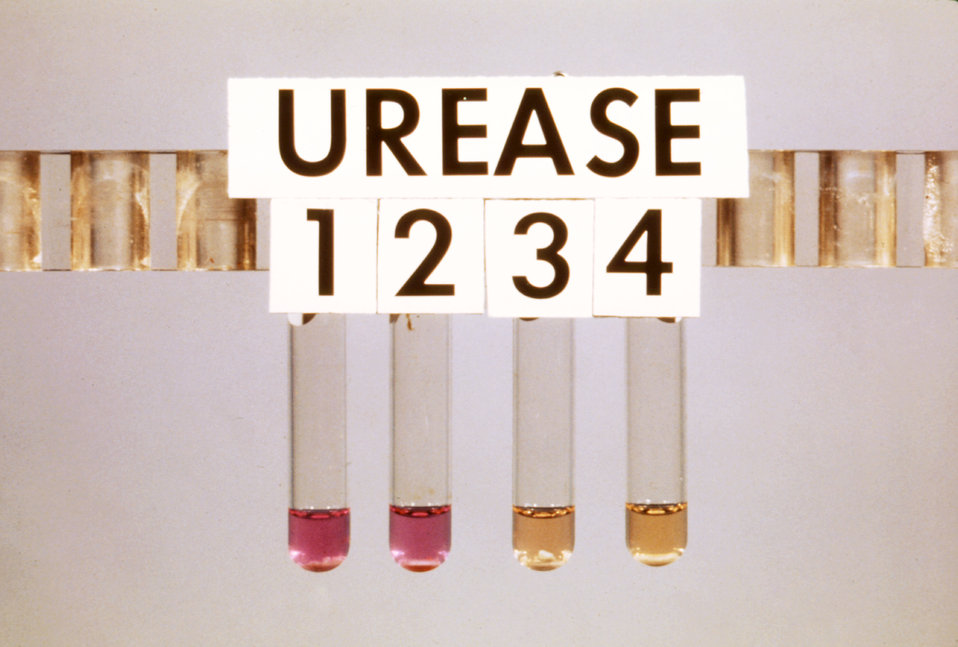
This was a urease test for taxonomic identification of Mycobacteria spp..